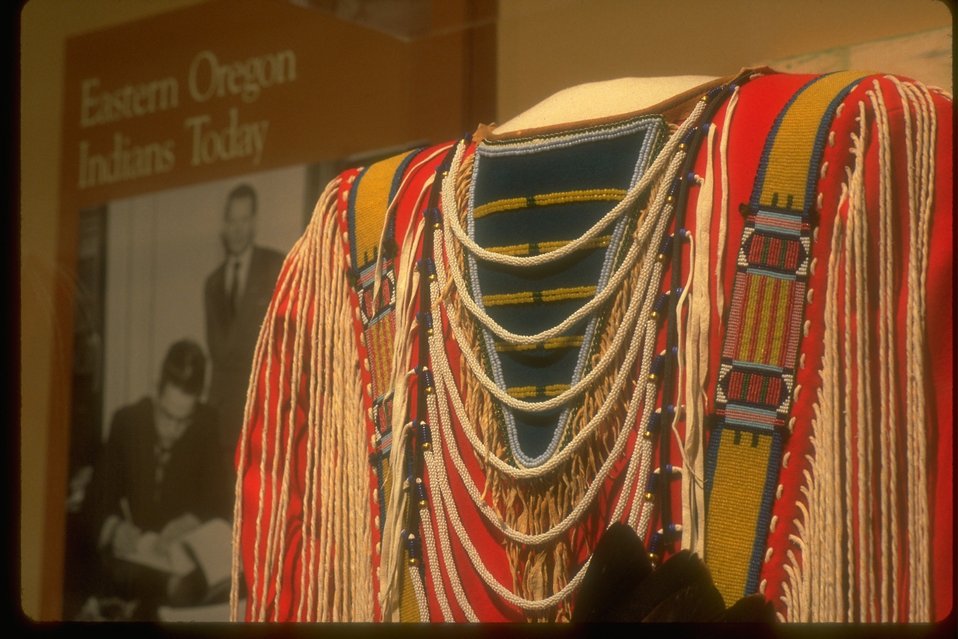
Detailed Native American clothing on display at the NHOTIC.